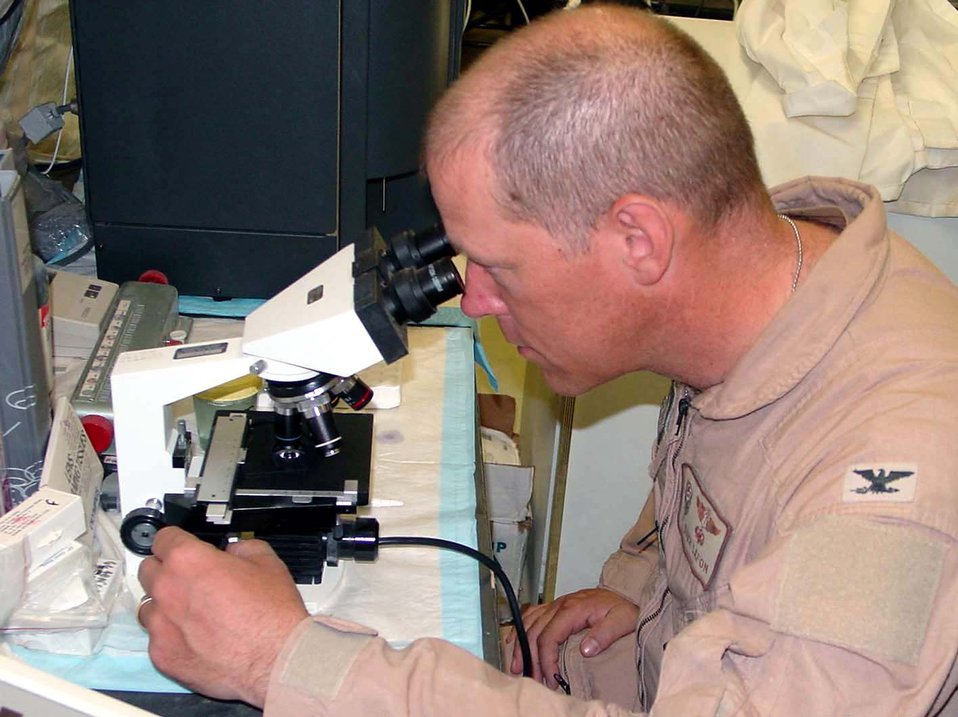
A closer look

OPERATION IRAQI FREEDOM -- Col. (Dr.) Darr LaFon uses a microscope that is smaller and lighter than previous versions. This type of equipment dramatically reduces the airlift requirements of deploying medical systems. LaFon is the commander of the 407th Expeditionary Medical Squadron at Tallil Air Base in southern Iraq.